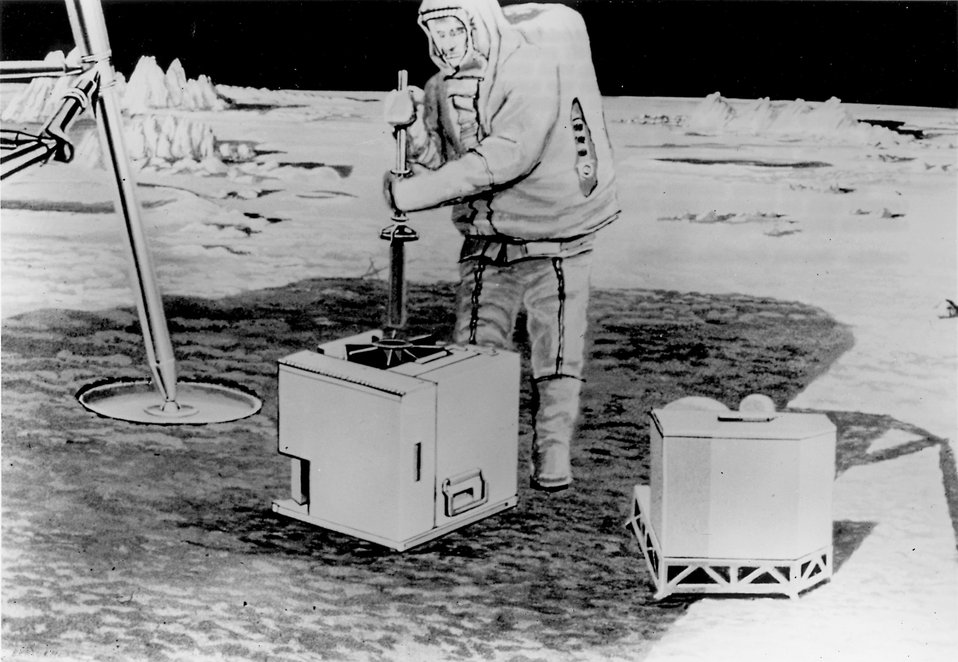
Apollo 12 Astronaut will insert the Plutonium-238 fuel capsule heat source into the SNAP-27 generator. Circa 1969.